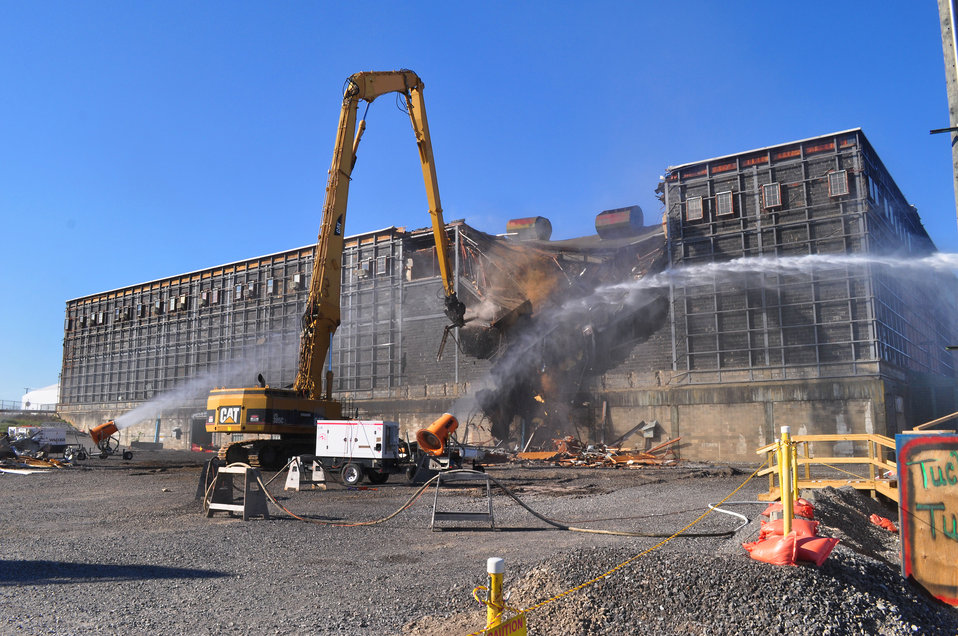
K-25 Beginning of North Tower Demolition

12-160-0309 DOE photo Lynn Freeny 10-24-2012 Oak Ridge Tennessee